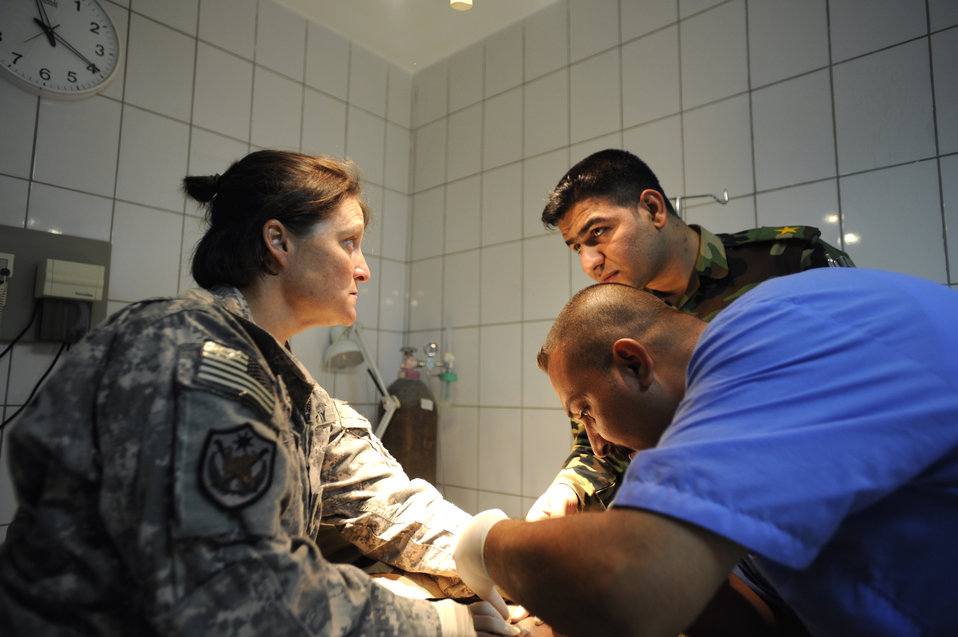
Medical advisers guide Iraqi army back into patients' trust

Army Staff Sgt. Barbara Seabert speaks to her Iraqi counterparts while examining a patient Aug. 17, 2009, at Camp Ur, Iraq. The Iraqi camp boasts a fully functioning medical clinic complete with a three-bay emergency room, pharmacy, dentist, radiology department and public health, as well as a highly trained team of doctors, nurses and technicians on staff. Sergeant Seabert is a Tallil Logistics Military Advisory Team medical adviser.